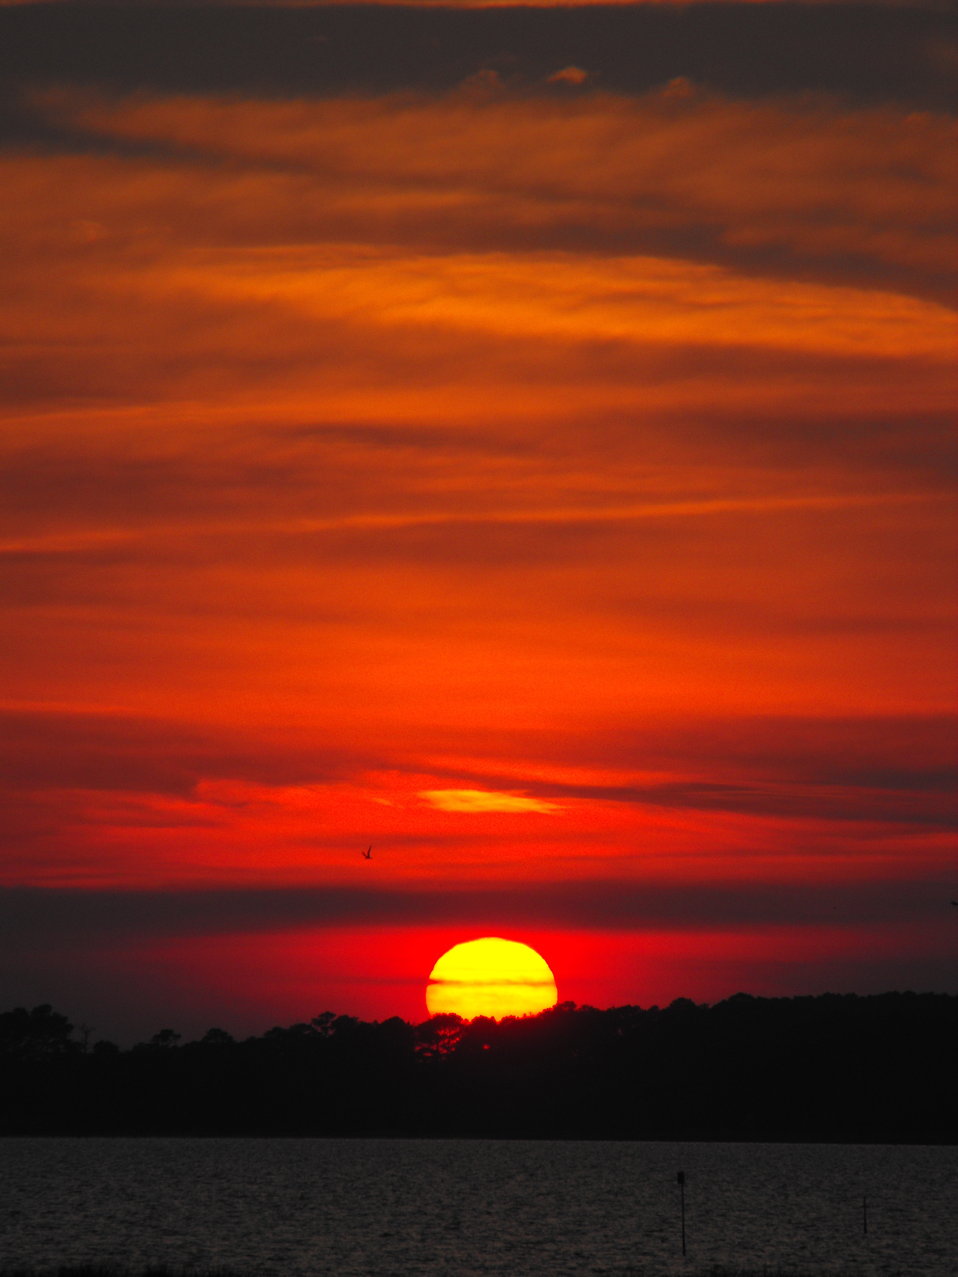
Sunset over Tom's Cove at Chincoteague National Wildlife Refuge / Assateague Island National Seashore.